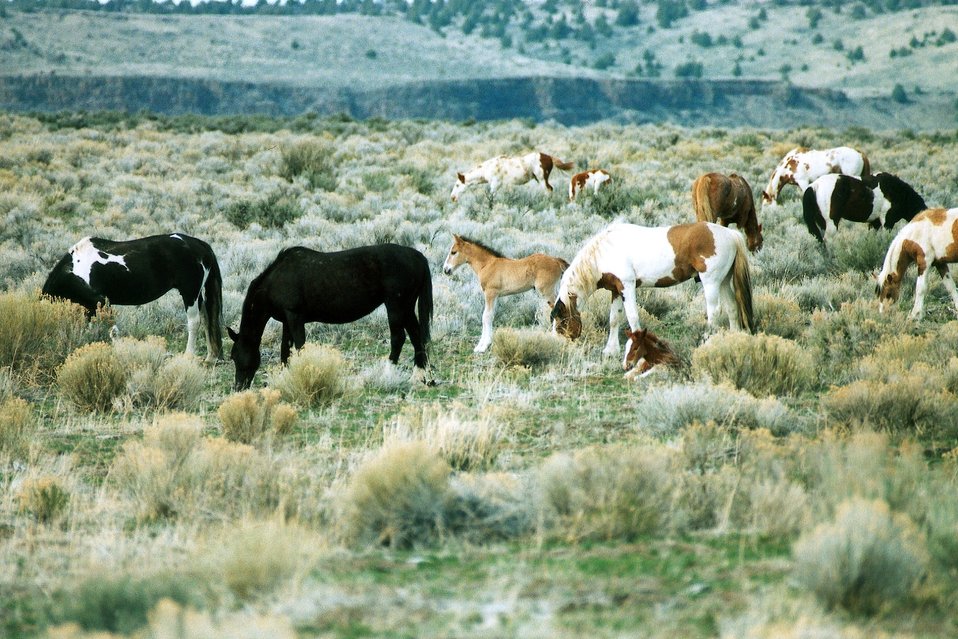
Medium shot of grazing mares and two foals.